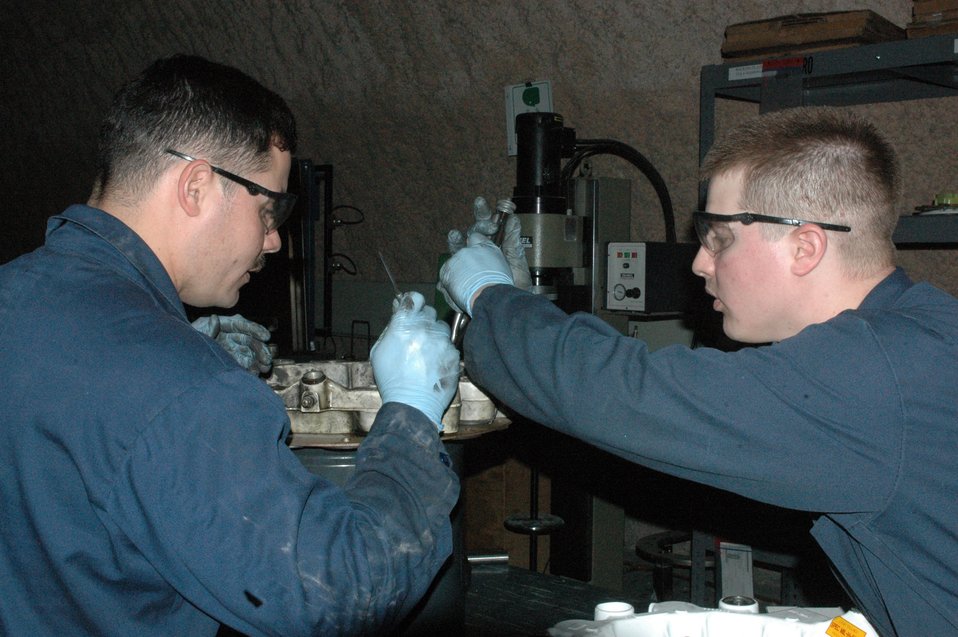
Intermediate repair facility keeps tankers flying

Staff Sergeants Christopher Crespo and Mark Hughes tighten bolts on a 250-pound KC-135 Stratotanker brake Feb. 25 at the only in-theater central intermediate repair facility in Southwest Asia. Both are members of the 379th Expeditionary Maintenance Squadron hydraulics flight.